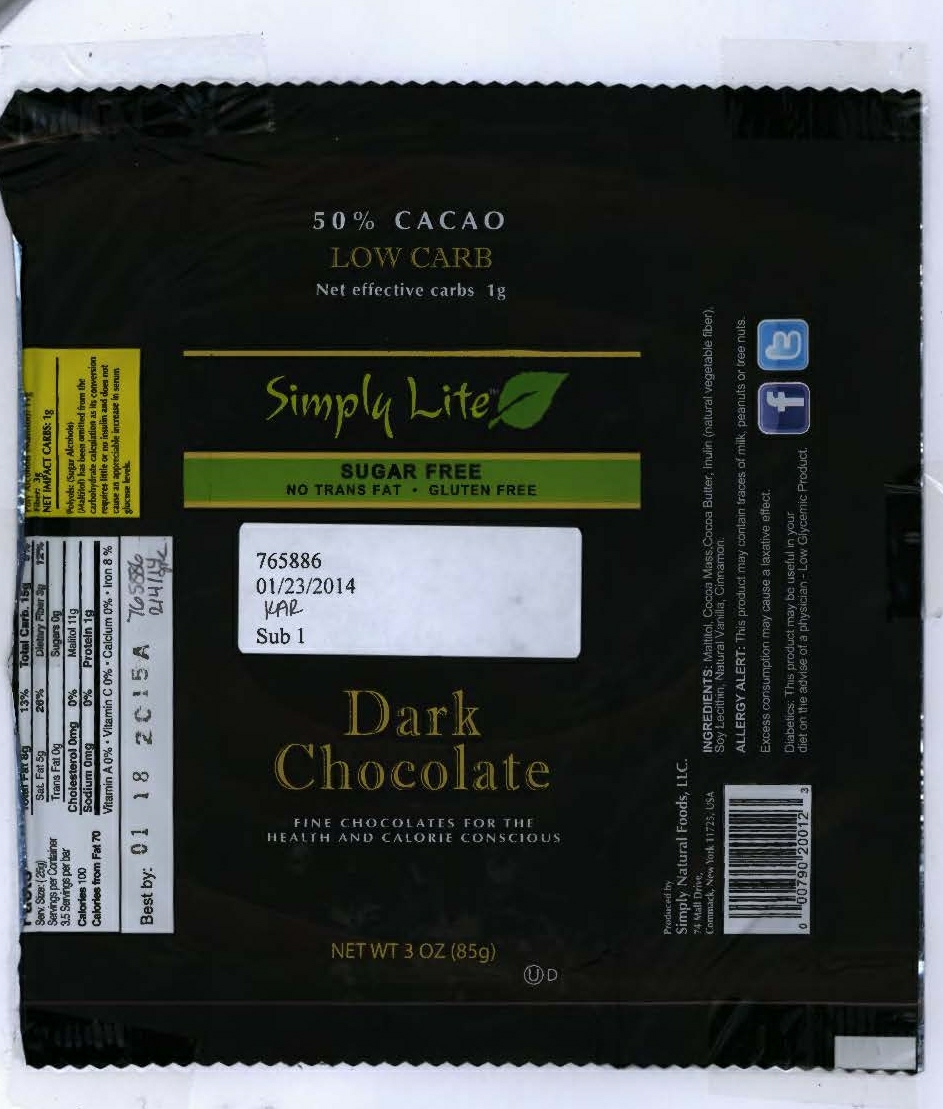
RECALLED - Chocolate

March 17, 2014 – Product Recall – Simply Natural Foods of Commack, N.Y., has agreed to recall Simply Lite brand 50% Cacao Low Carb Sugar Free Dark Chocolate 3-ounce bars bearing the lot codes “Best By: 01 18 2015A” or “Best By: 01 19 2015A” on the back of the packaging. FDA testing of some of the bars has found that they contain milk protein. Milk is a major food allergen and can cause mild to life-threatening reactions in allergic individuals.